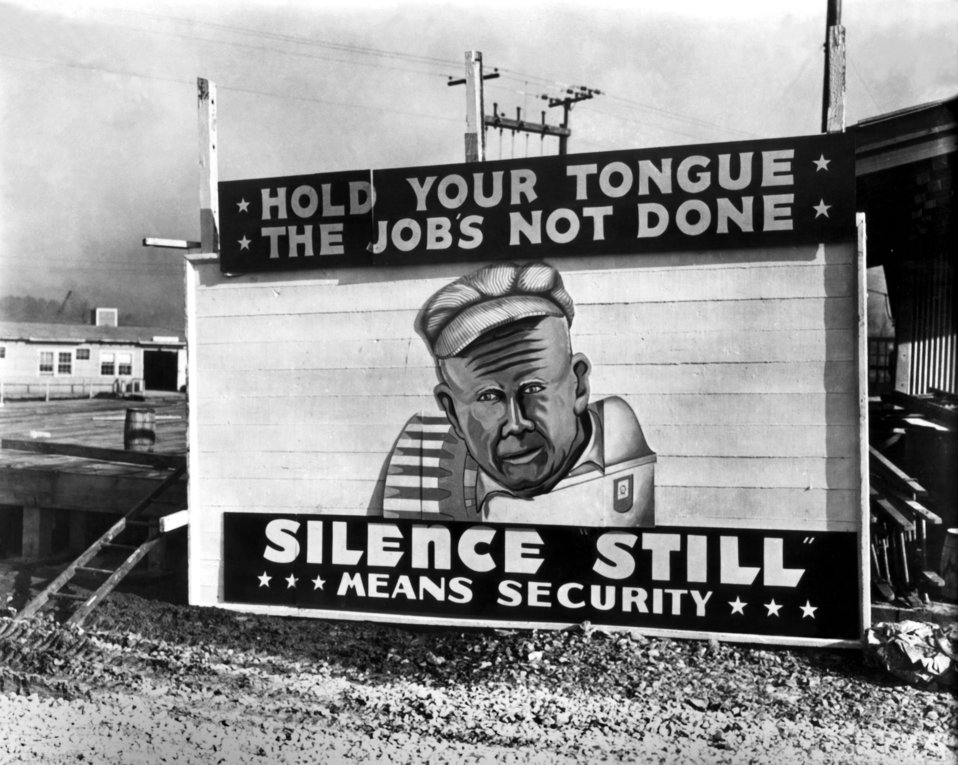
Hawley Plant Security Poster Allis Chalmers Milwaukee WisconsinDuring World War II

MED399 DOE photo Ed Westcott
Hawley Plant Security Poster Allis Chalmers Milwaukee Wisconsin 1944